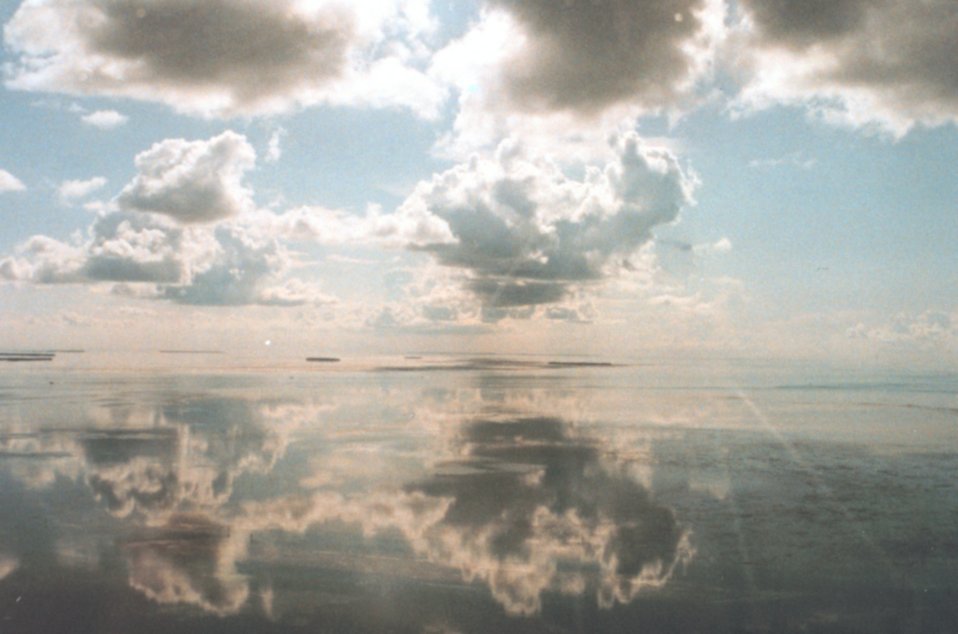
Which way is up? A mirror-smooth sea reflects cumulus clouds on a still morning in the Keys.